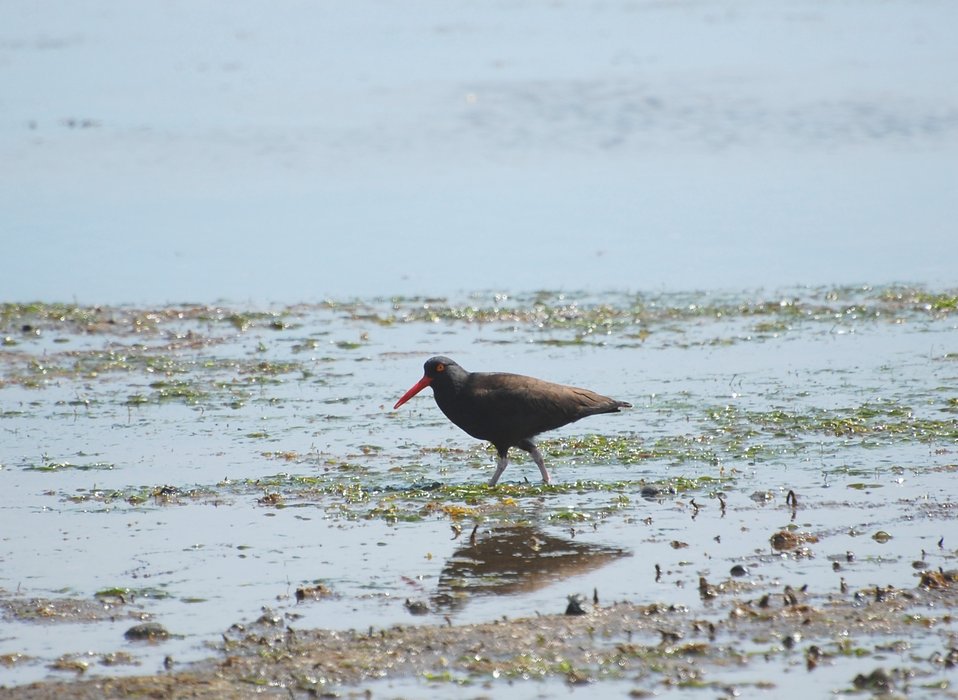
Black Oystercatcher

Kinzarof Lagoon, Izembek National Wildlife Refuge
Photo by Kristine Sowl,
USFWS, Public Domain